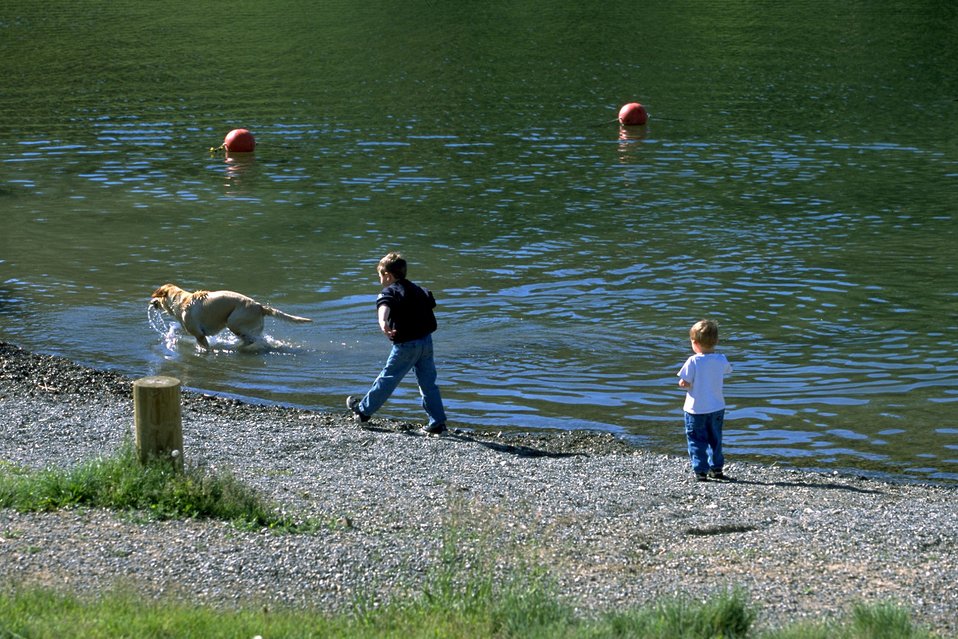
Kids and dog playing on the beach at Log Gulch Campground